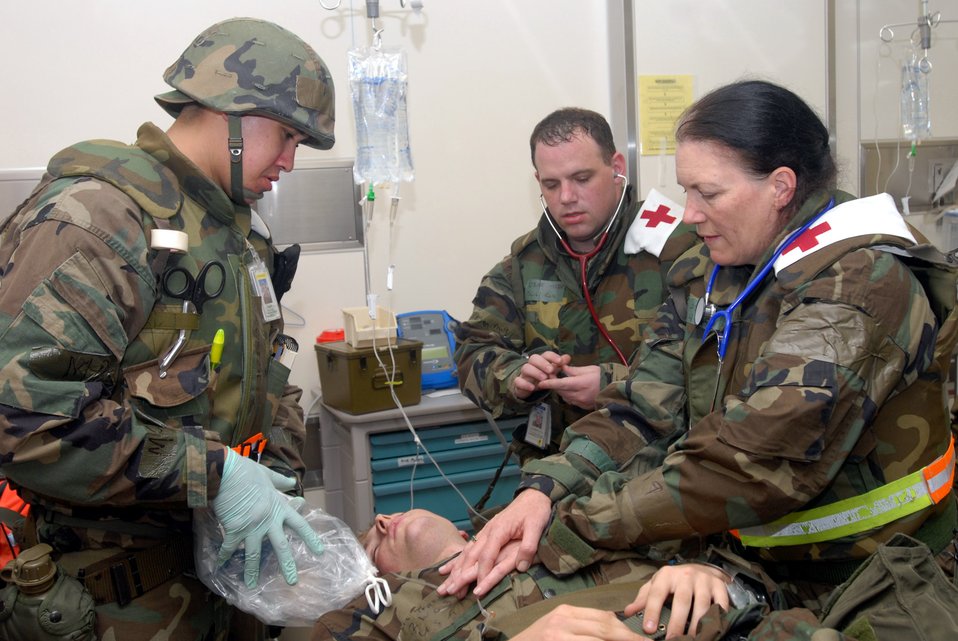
Operational readiness exercise tests Airmen, Marines

Members of the 18th Medical Support Squadron and 18th Medical Operations Squadron perform cardiopulmonary resuscitation on a victim with smoke inhalation as part of an attack scenario during a local operational readiness exercise Dec. 5 at Kadena Air Base, Japan.